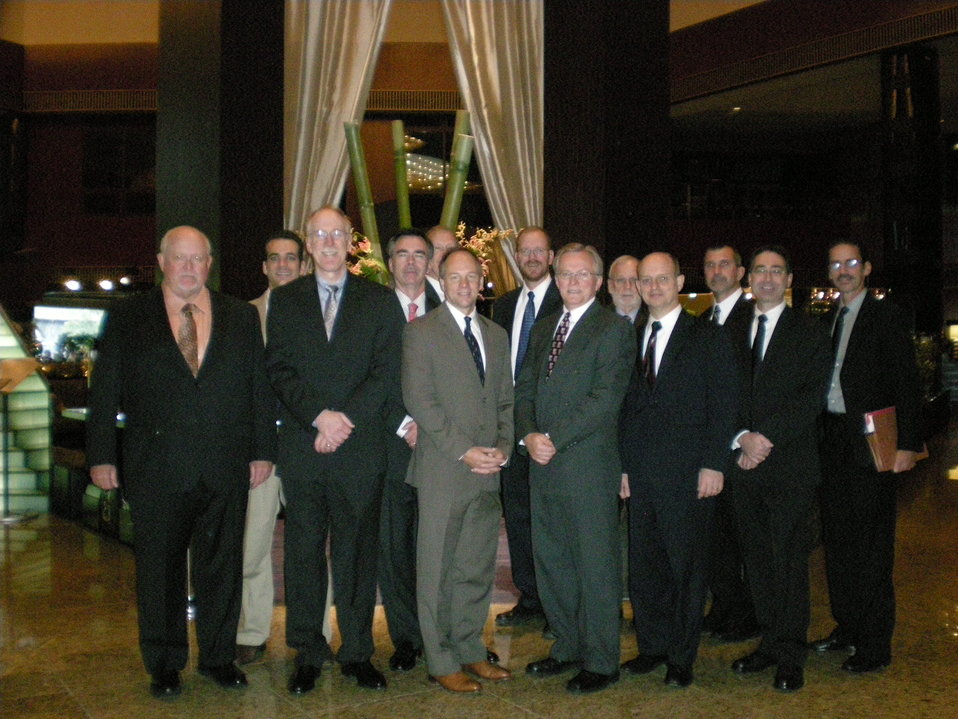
EM-Led Delegation Offers Nuclear Cleanup Expertise in Workshop in Japan

When Japanese officials began cleanup of the Fukushima Daiichi Nuclear Power Plant accident that occurred this year, they called on the DOE to provide expertise and experience.

The U.S. delegation included, front row, left to right, Doug Akers, Steve Schneider, Robert Montgomery, Dan McCabe, Steve Herring, Paul Bredt, Rich Abitz; back row, left to right, Jeff Miller, Jeff Griffin, Bob Sindelar, Reid Peterson, Chuck Negin, and Wayne Johnson.